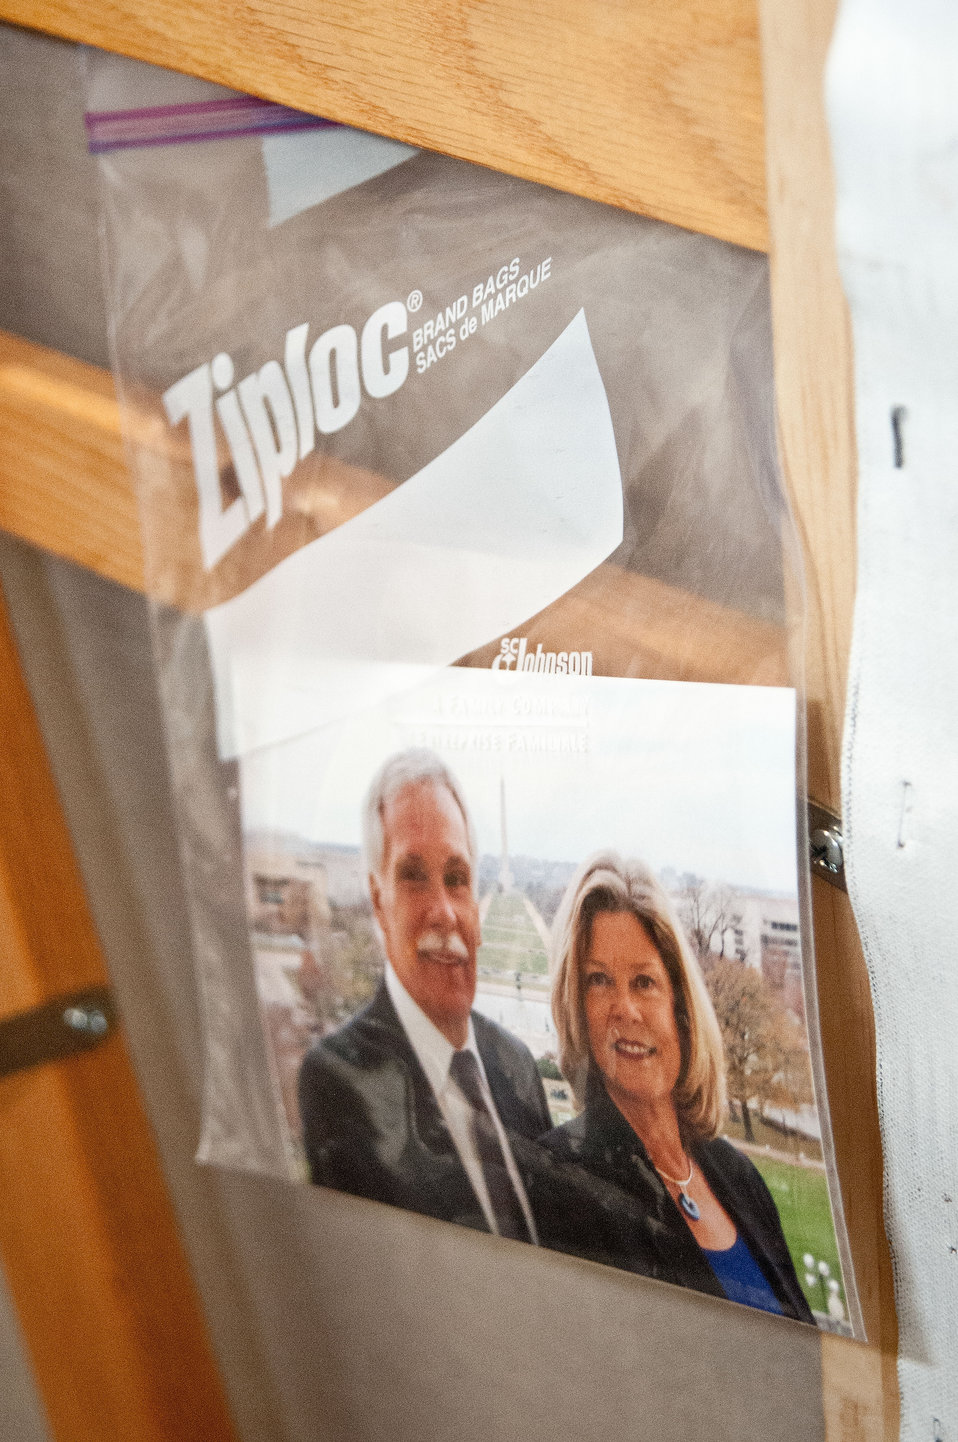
Former Agriculture Secretary Ed Schafer attached this photograph of he and his wife taken from the Capital facing the Washington Monument to the back of his portrait after the unveiling at the United States Department of Agriculture in Washington, D.C., on Friday, April 27, 2012.